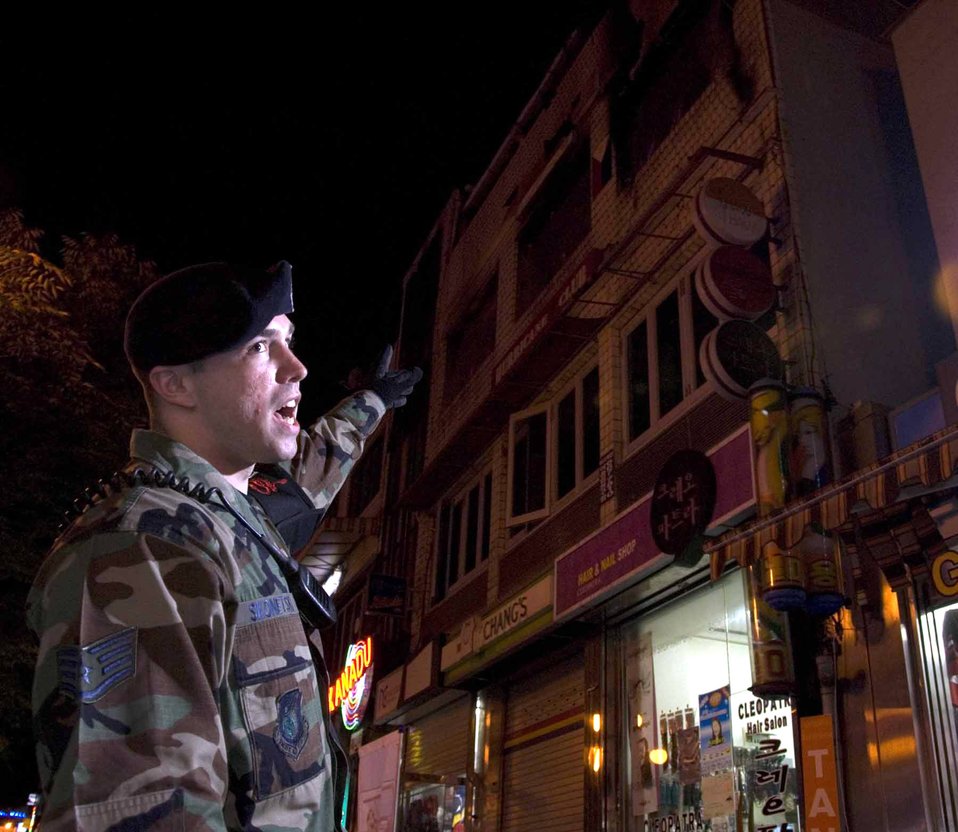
Osan Airmen save lives, property

Staff Sgt. Michael Skonetski describes the building fire and how he and three other town patrol members helped evacuate patrons outside of Osan Air Base, South Korea. Sergeant Skonetski is a 51st Security Forces Squadron town patrol member.